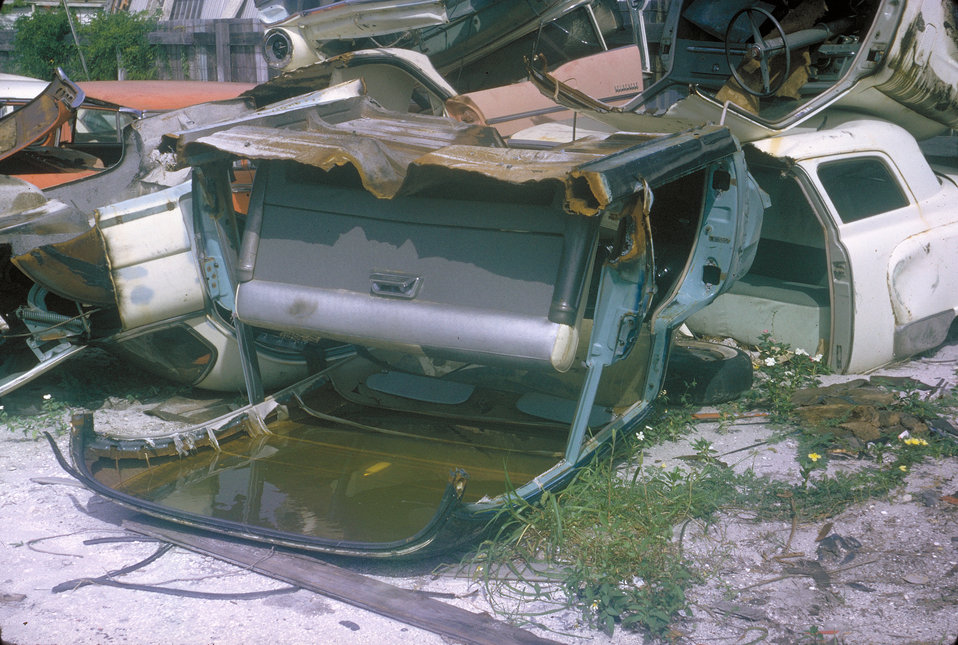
Car parts in West Palm Beach, Florida. Aedes aegypti mosquito breeding site.